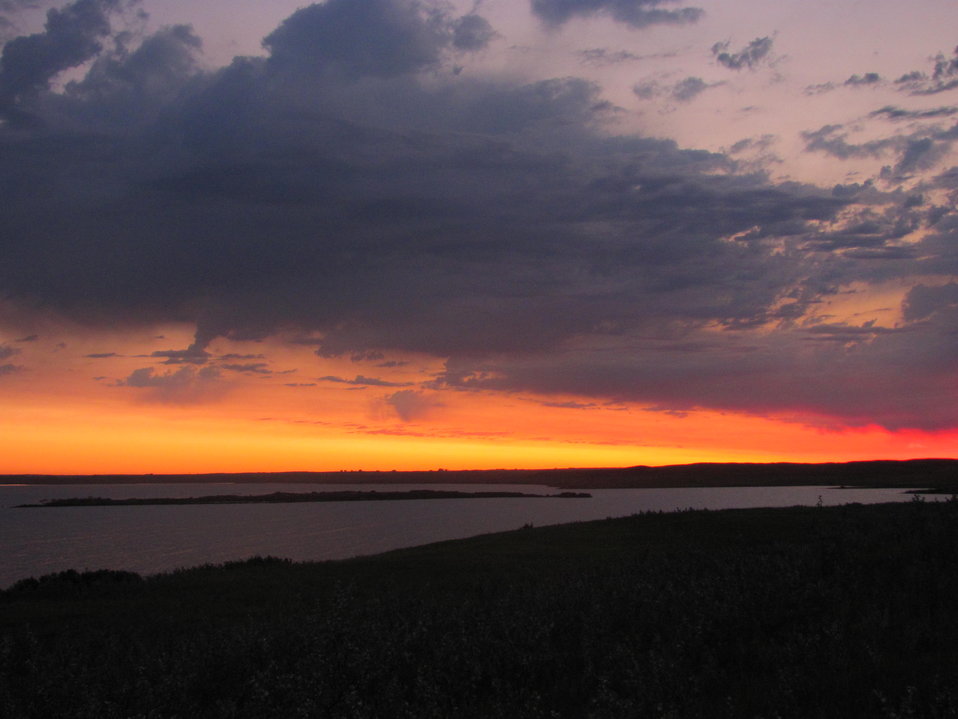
Chase Lake NWR South Island Sunrise

This beautiful sunrise over the south island of Chase Lake National Wildlife Refuge was taken just before pelican banding.

Photo Credit: Char Binstock/USFWS; Chase Lake National Wildlife Refuge, ND (2012)

Photo Contest Entry #100